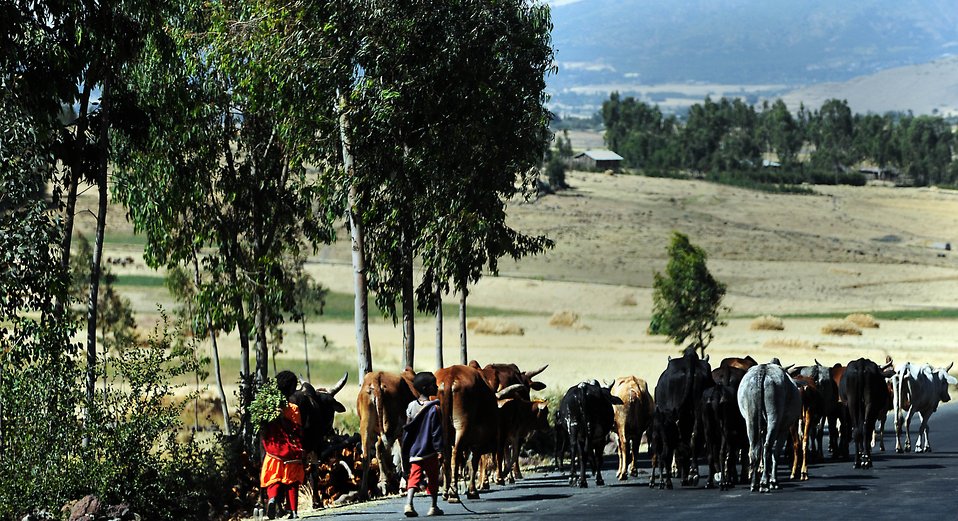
144 hours in Ethiopia: Africa remembers

Two children herd a line of cattle along the road to Addis Ababa, Ethiopia, Dec. 8, 2011. From a very young age, children in Ethiopia are taught to contribute to the welfare and profession of their families.